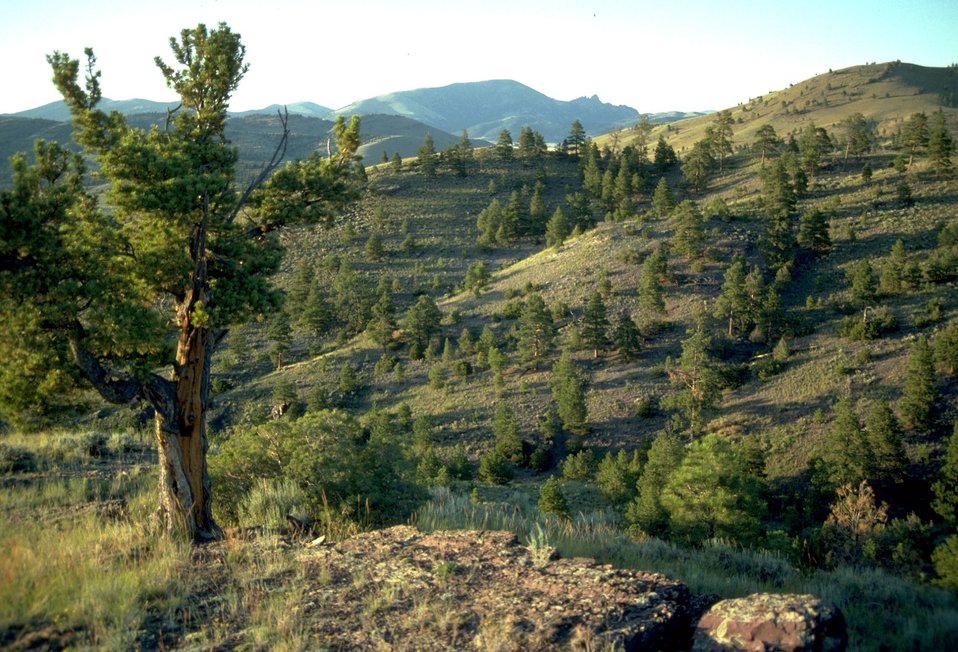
Sleeping Giant area